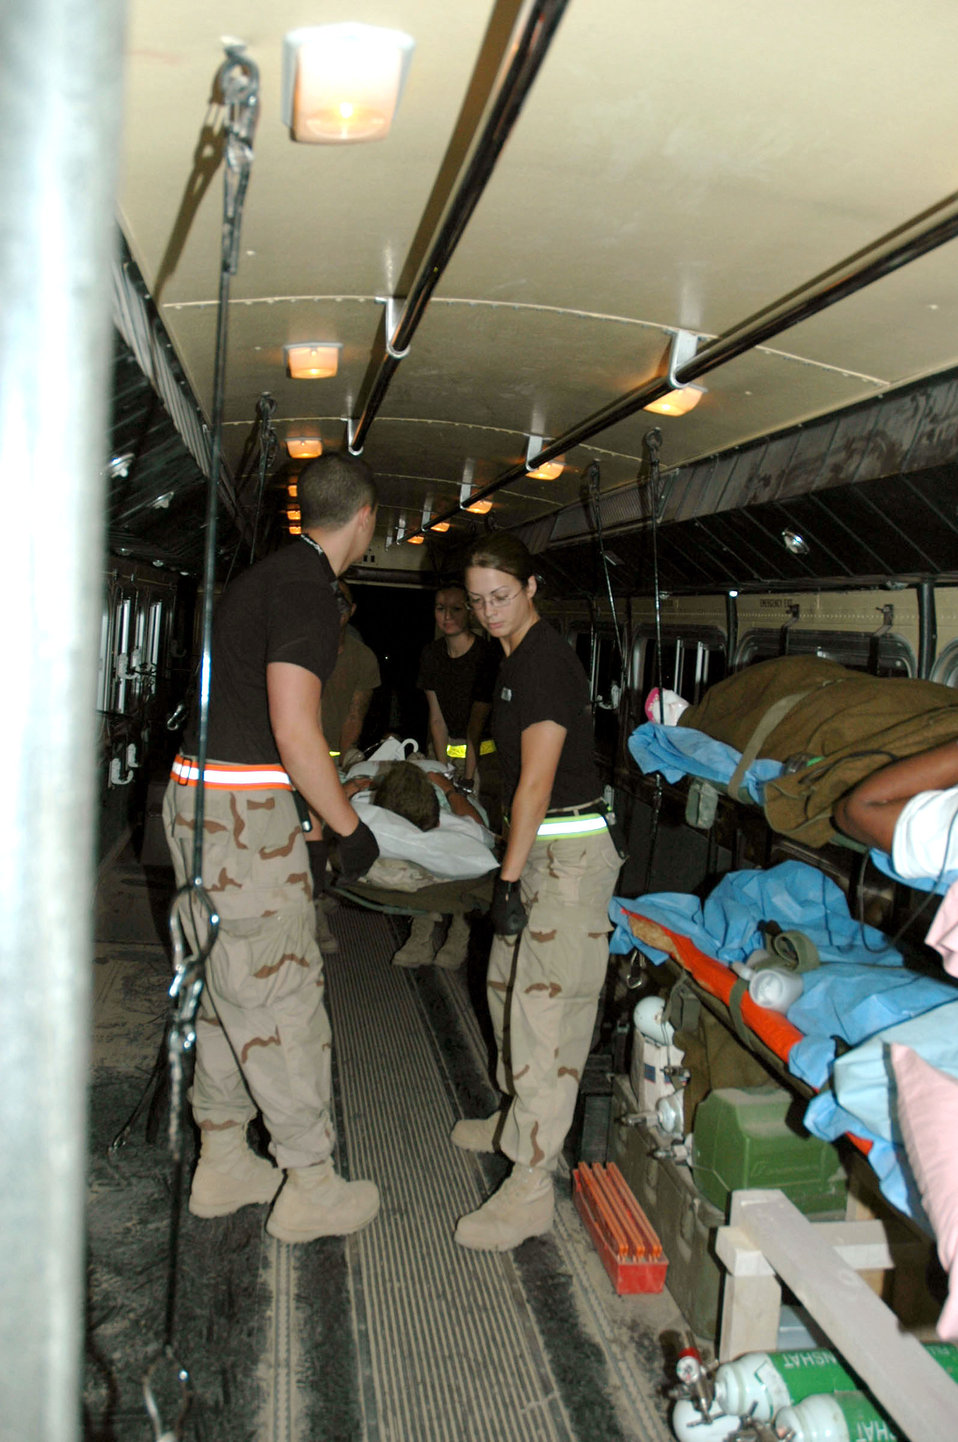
Staging facility takes over where hospital leaves off

BALAD AIR BASE, Iraq -- Volunteers help Airmen with the 332nd Expeditionary Medical Group's contingency aeromedical staging facility move patients onto ambulance-type buses equipped with necessary medical supplies.